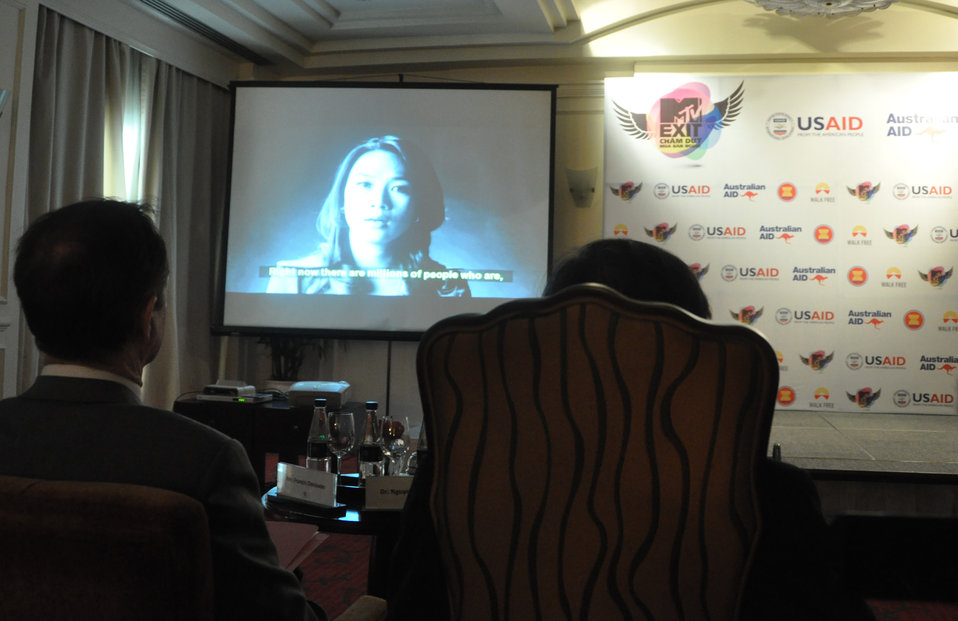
USAID joins MTVExit to launch documentary and awareness campaign against human trafficking